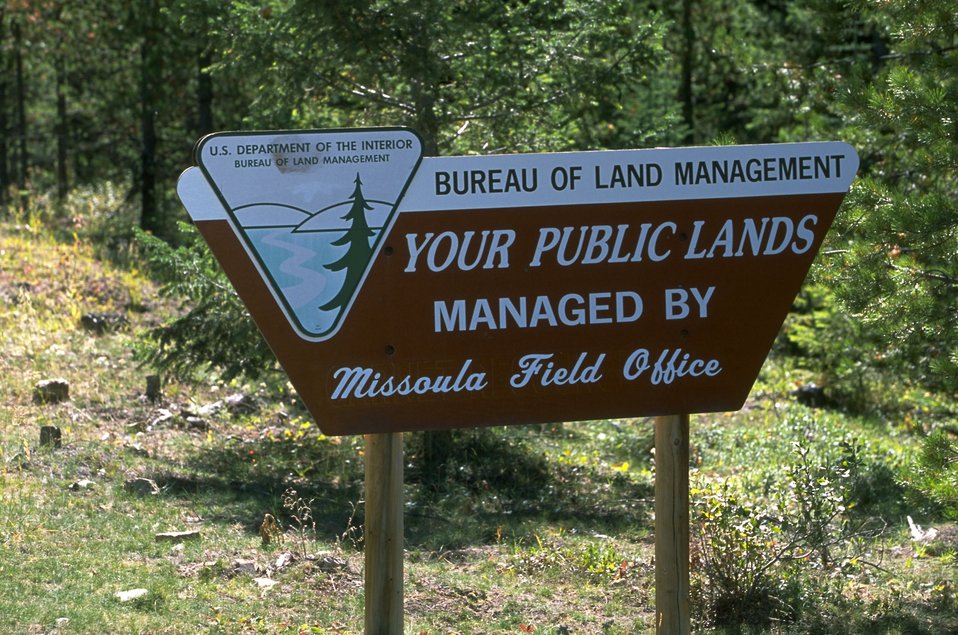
Garnet Back Country Byway--general sign stating managment of public lands by BLM Missoula